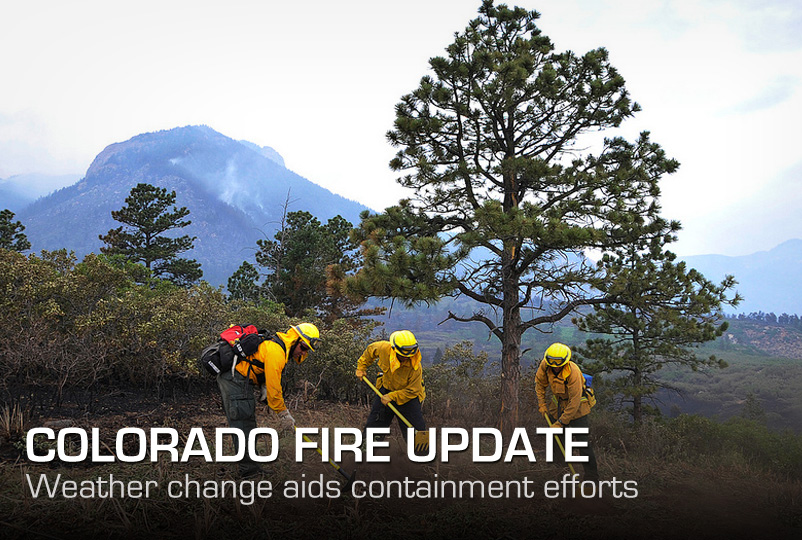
Colorado fire update

Tech Sgt. Jason Linta, Bobby Garza and Dean Prestia cut lines to create a firebreak to prevent fires from jumping at the U.S. Air Force Academy, Colo., on June 28, 2012. Sergeant Linta is a firefighter assigned to the Academy and Garza and Prestia are firefighters assigned to Buckley Air Force Base, Colo. The Waldo Canyon fire has destroyed more than 18,000 acres in the Colorado Springs area.